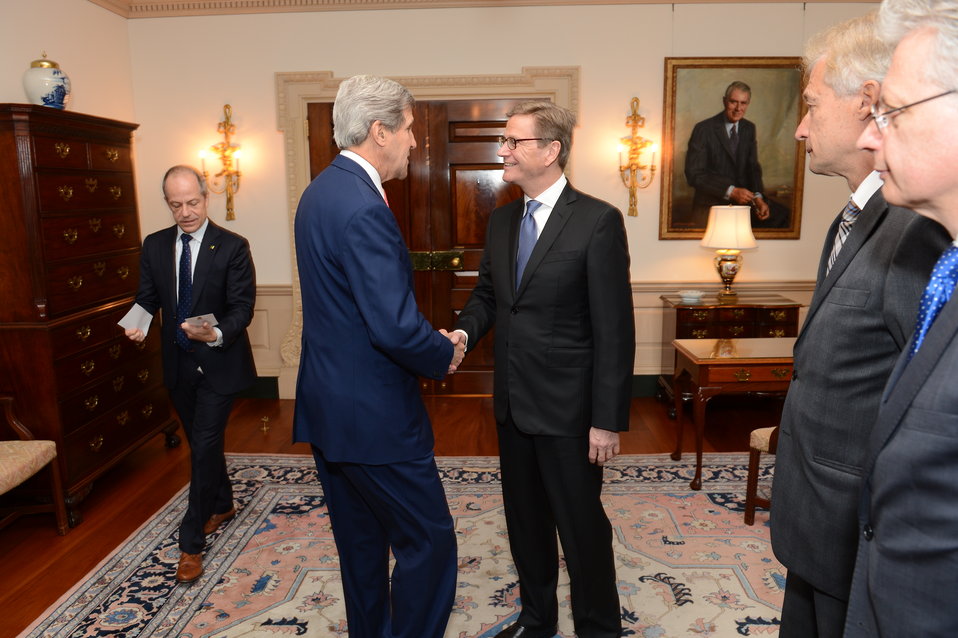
Secretary Kerry Shakes Hands With German Foreign Minister Westerwelle

U.S. Secretary of State John Kerry shakes hands with German Foreign Minister Guido Westerwelle before their bilateral meeting at the U.S. Department of State in Washington, D.C., on May 31, 2013.